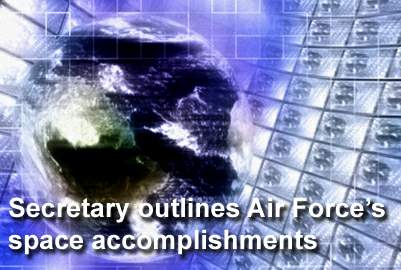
Air Force secretary discusses state of force at Global Warfare Symposium

Air Force Secretary Michael B. Donley delivered a key note speech regarding the service's future with special attention to the space mission at the 2009 Air Force Association Global Warfare Symposium Nov. 20, 2009, in Los Angeles. At the conclusion of the two-day summit, the secretary outlined the service's space accomplishments during the last year, which included 65 space launch missions from nine ranges, examined the increasing role of space in the strategic environment, and the challenges and changes that lay ahead.